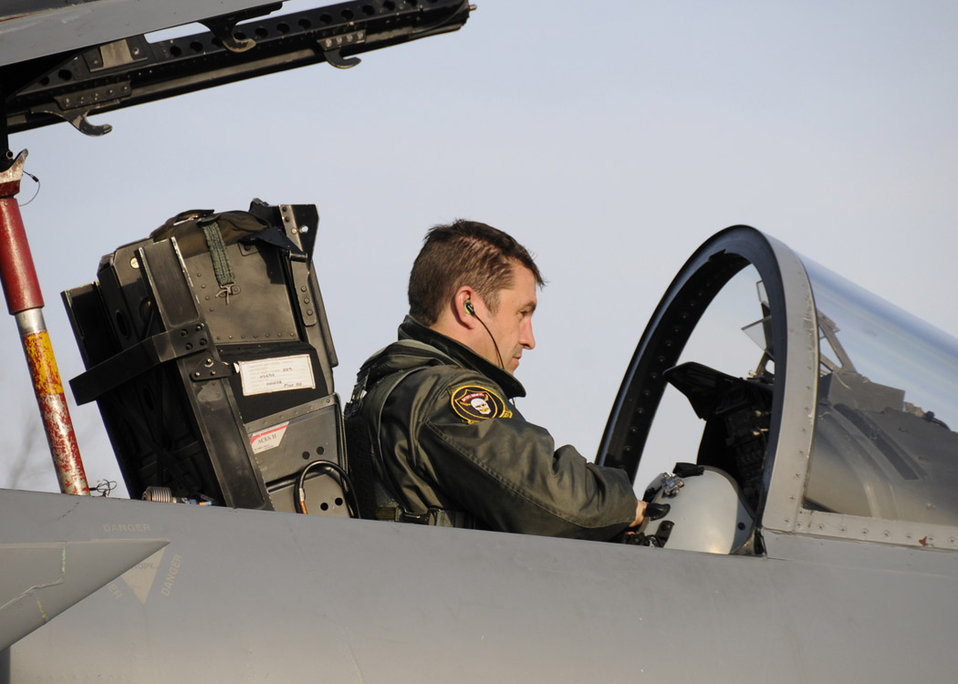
Readiness paramount in Baltic air policing mission

Maj. David Pryor removes his helmet after a mock scramble Nov. 11 in Siauliai, Lithuania. The pilots stay on alert status 24 hours a day, seven days a week, to support the NATO Baltic air policing mission. Major Pryor is a 493rd Expeditionary Fighter Squadron pilot.